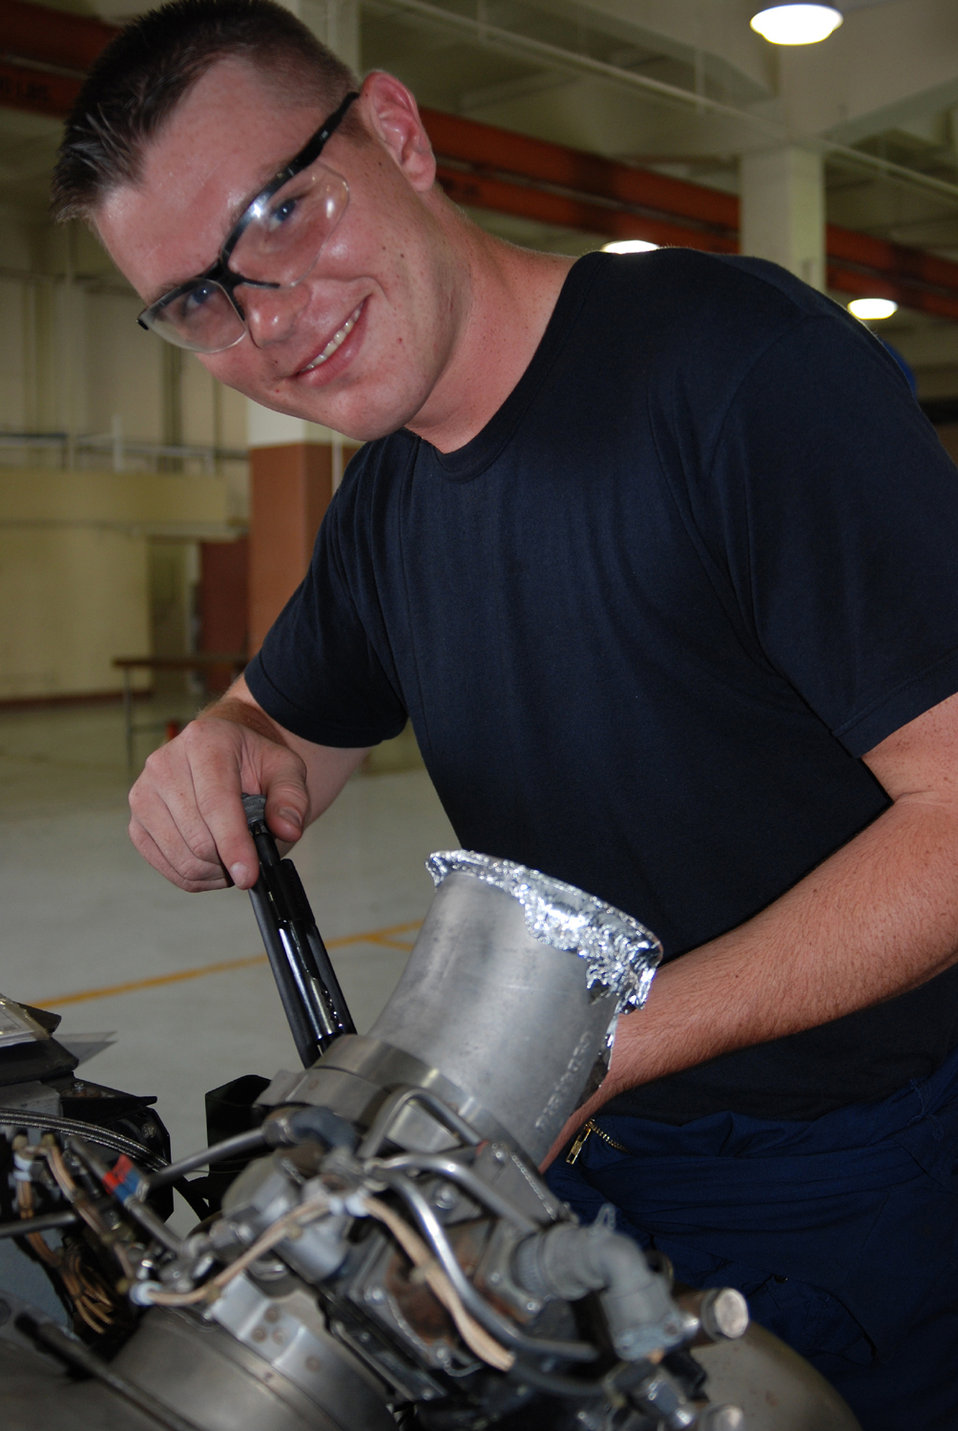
Airman earns medal for lifesaving efforts

Airman 1st Class Kyle Thomas, 36th Maintenance Squadron aerospace ground equipment mechanic, saved a seven-year-old child?s life at a Norman, Okla., bowling alley while on leave before flying to his first duty station here on Andersen. Airman Thomas received an Achievement Medal for performing the Heimlich maneuver, which he learned in basic military training to eject candy that was lodged in the child?s throat, causing him to choke.